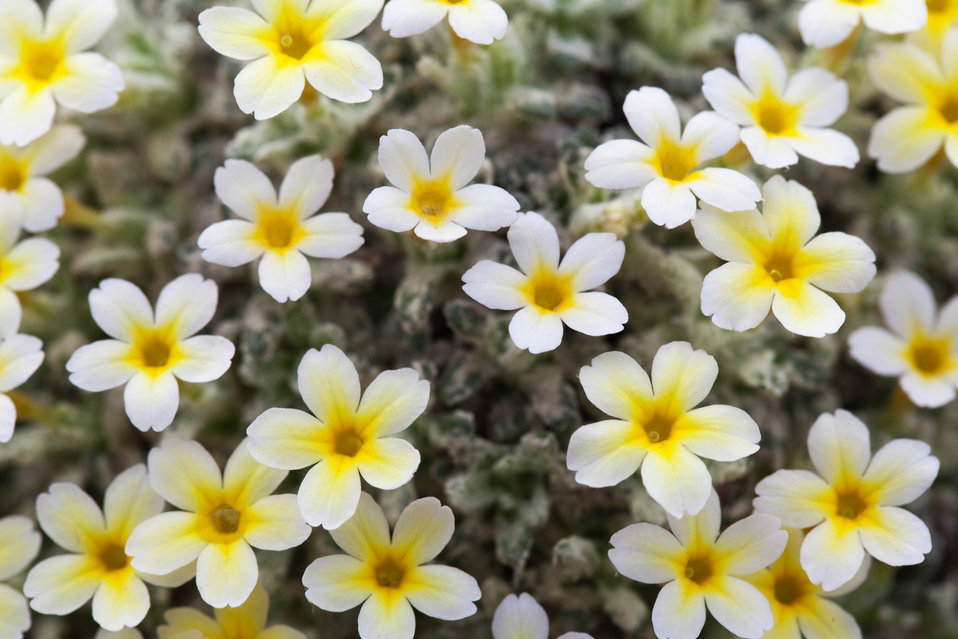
Tiny yellow white flowers

Tiny yellow white flower background.